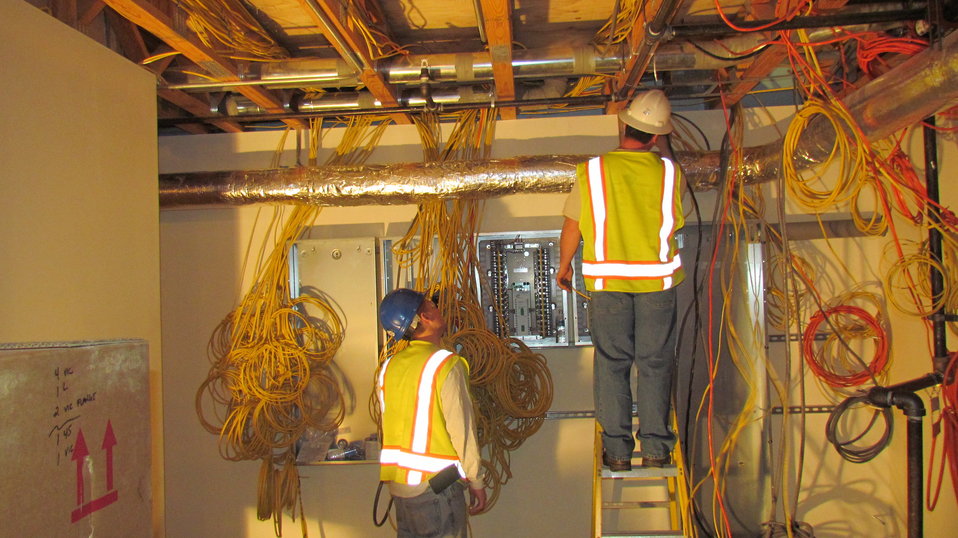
Electrical contractors connecting wires to switchgear in basement of NZERTF.